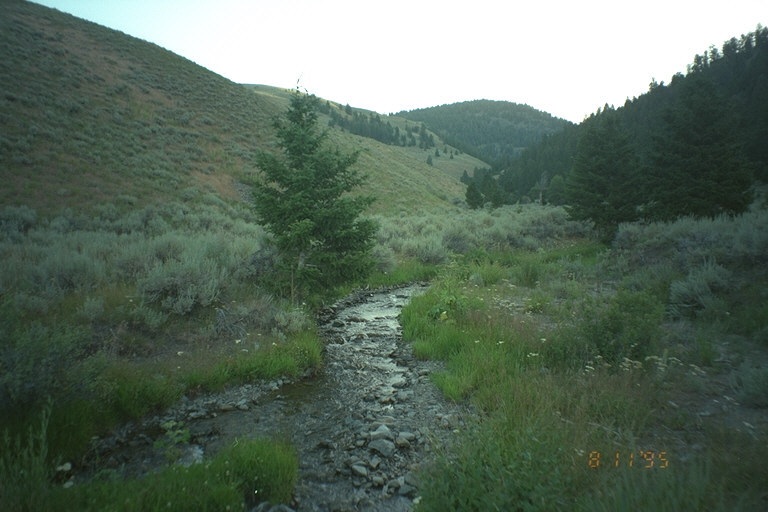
Riparian area Public Lands Salmon Field Office UCSC Upper Columbia Salmon Clearwater District